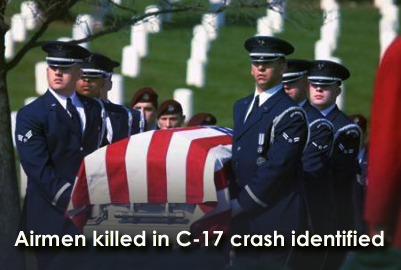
Airmen killed in C-17 crash identified